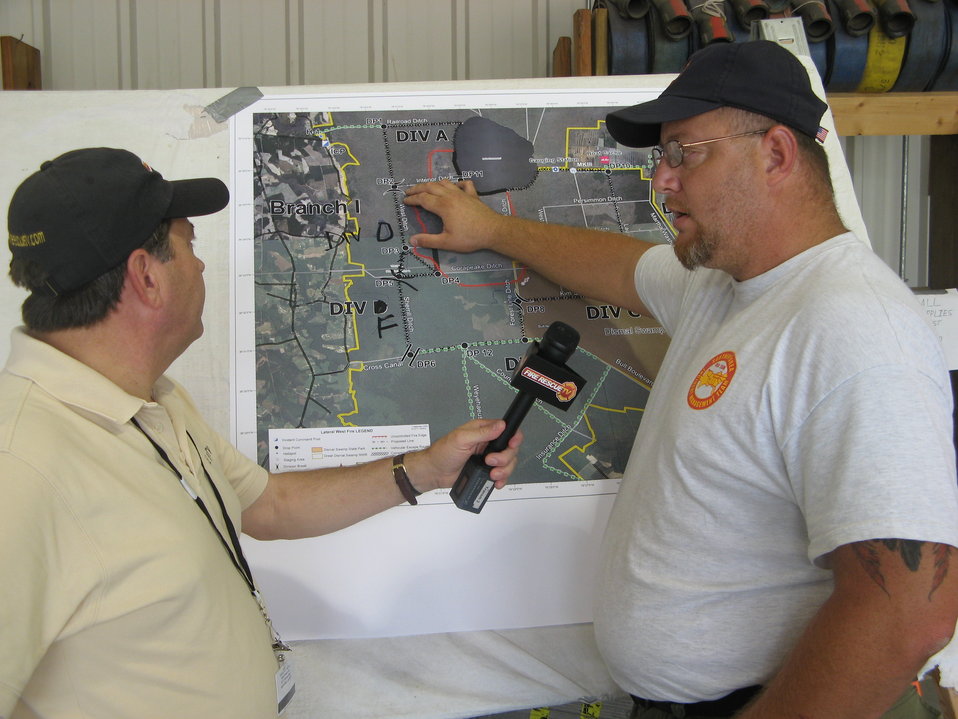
Firefighter to firefighter

Suffolk, VA, August 2011: Operations Chief trainee Kyle Smith explains to Martin Grube of Fire Rescue TV how the Type 1 Southern Area Blue Incident Management Team is managing the Lateral West Fire on Great Dismal Swamp National Wildlife Refuge.